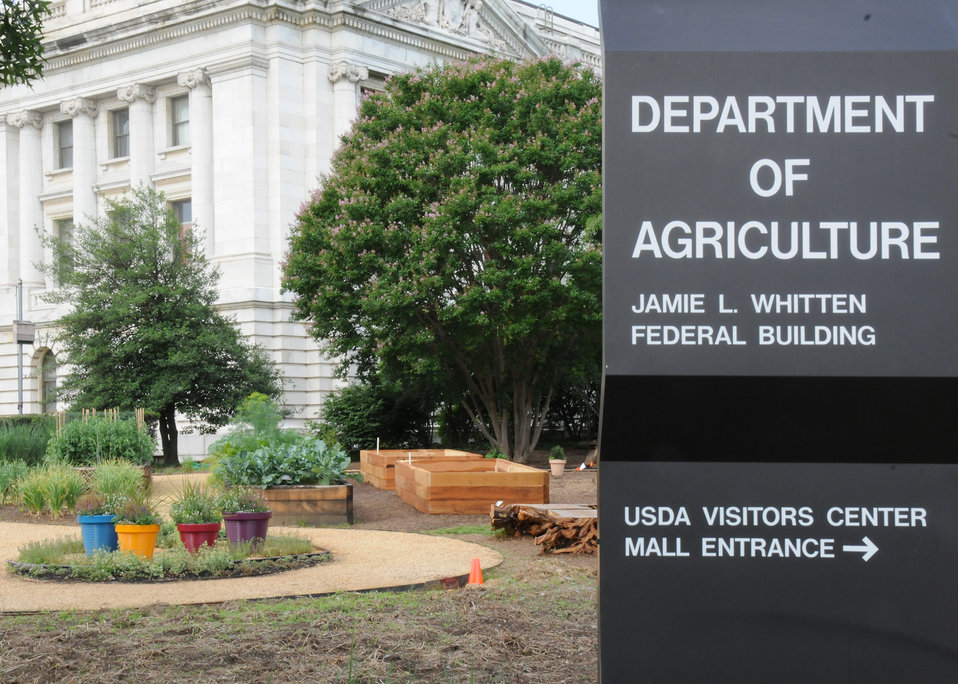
On Friday, May 28, 2010 the Department of Agriculture People’s Garden in Washington, DC is ready for the harvesting of its first crop of vegetables (peas, lettuces, beets, kohlrabi, and turnip greens). New planting beds for New Mexico chiles were constructed on the garden site. All vegetables harvested are donated to the Capital Area Food Bank. USDA photo 10di1383-09.